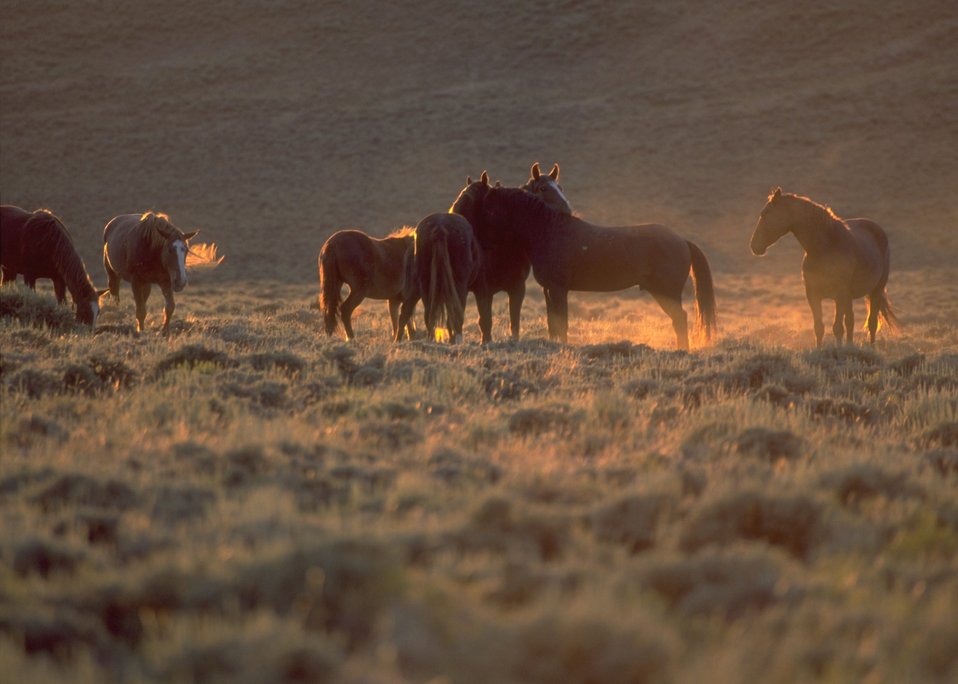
Wild horses, Rock Springs Field Office.